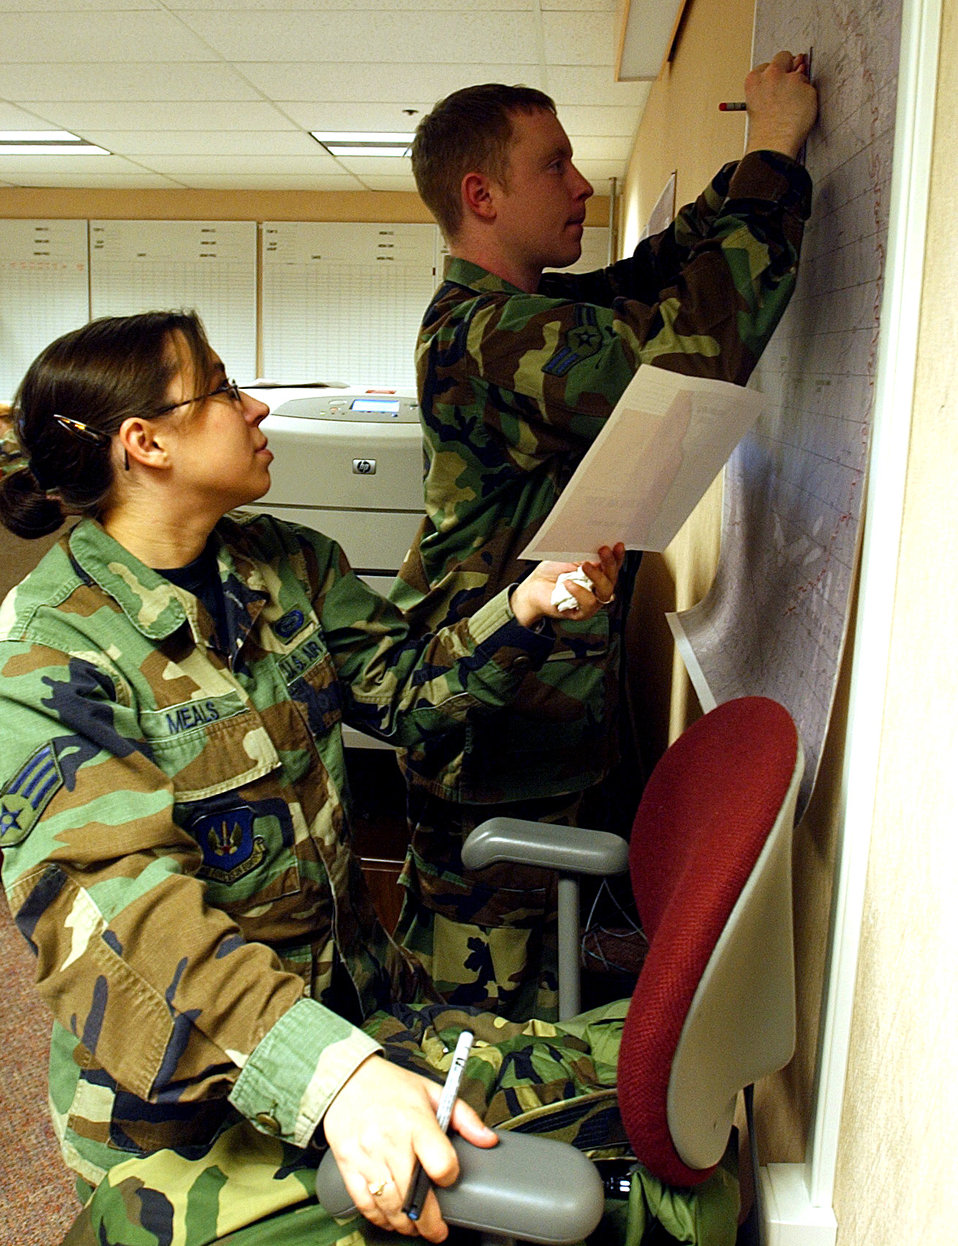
Thunderous combat

EIELSON AIR BASE, Alaska -- Senior Airman Lulimana Meals and Airman 1st Class Ryan Blackburn plot a mission Oct. 7 for the first tactical mission of Cope Thunder 06-01. The two-week Alaskan exercise is the largest air combat training exercise, involving more than 1,000 active-duty and Air National Guard Airmen and 87 aircraft. The sergeants are intelligence analysts with the 52nd Operations Support Squadron from Spangdahlem Air Base, Germany.